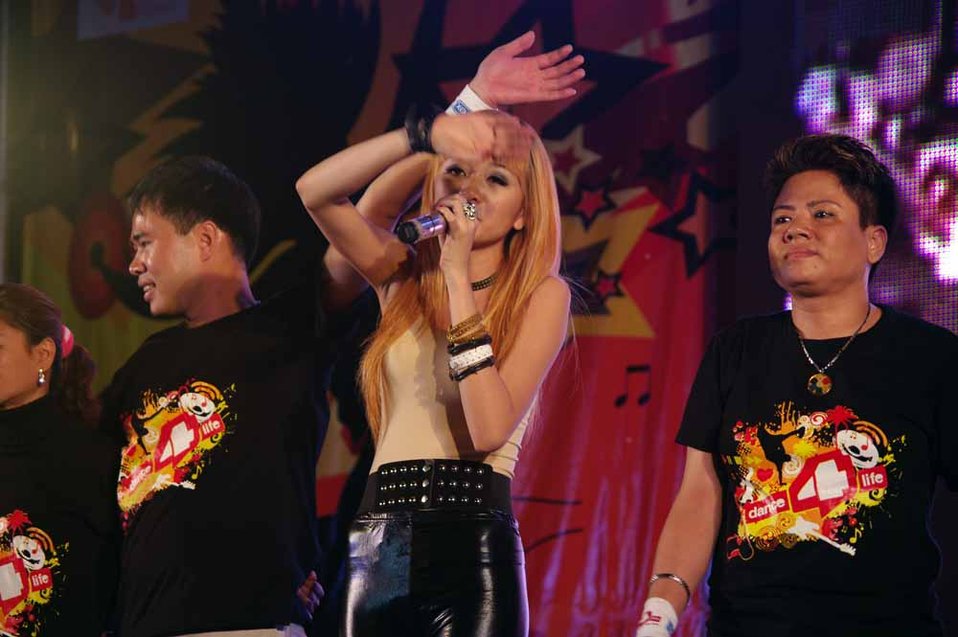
dance4life, Hanoi